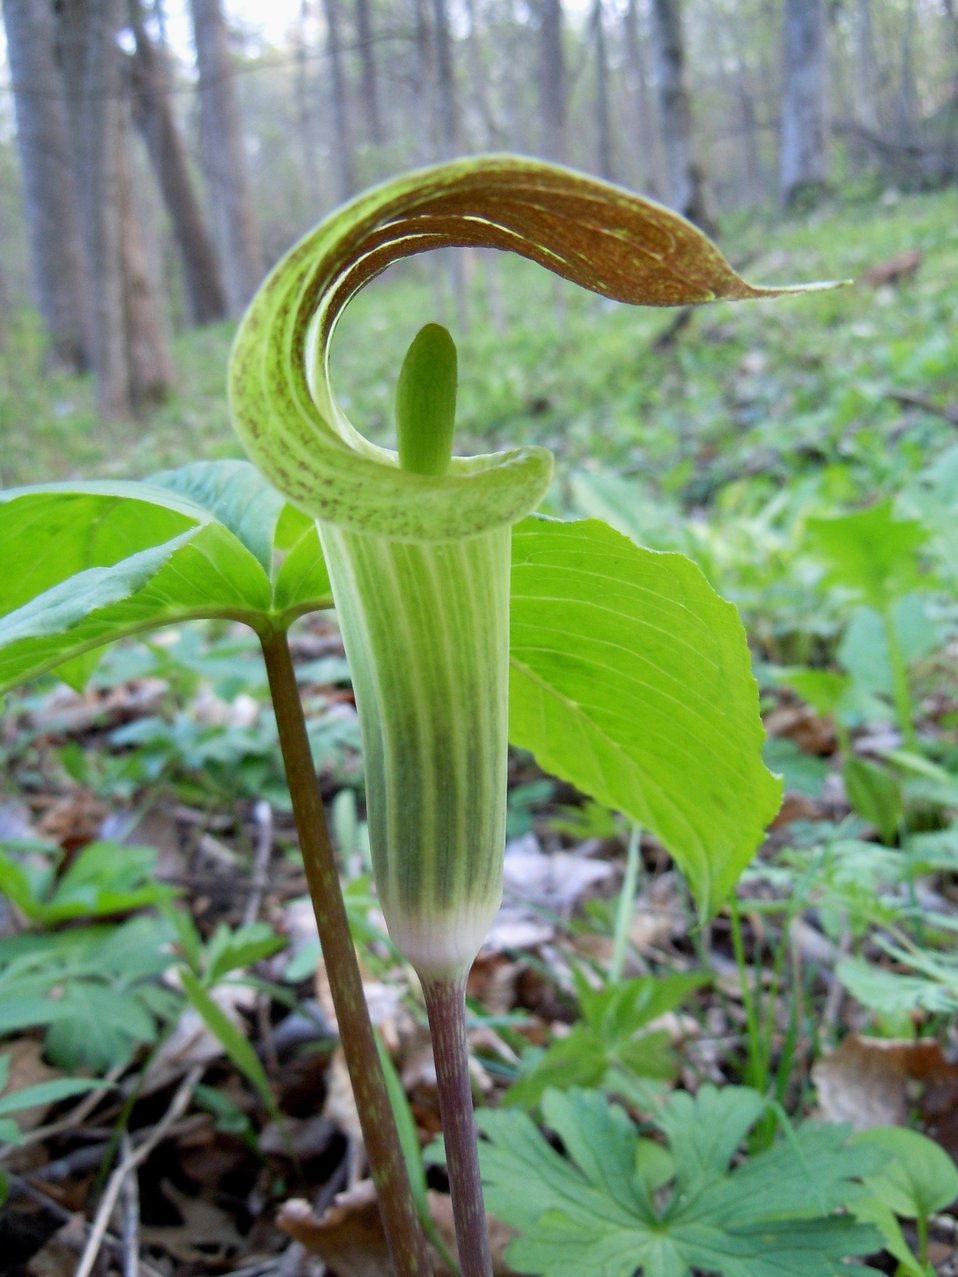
Jack in the Pulpit